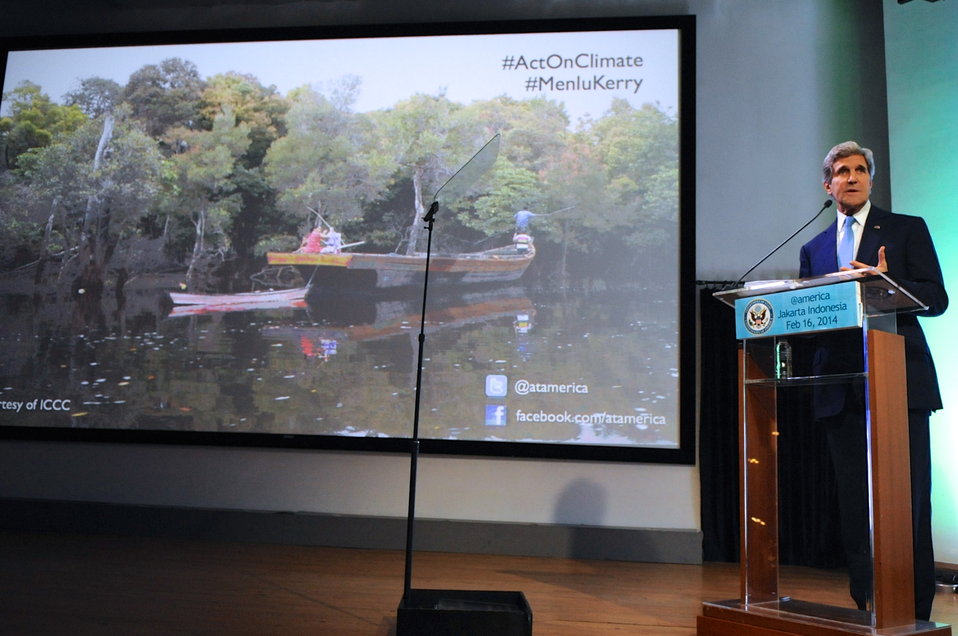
Secretary Kerry Delivers Climate Change Speech in Jakarta

U.S. Secretary of State John Kerry delivers the first of three major climate change speeches in Jakarta, Indonesia, on February 16, 2014.